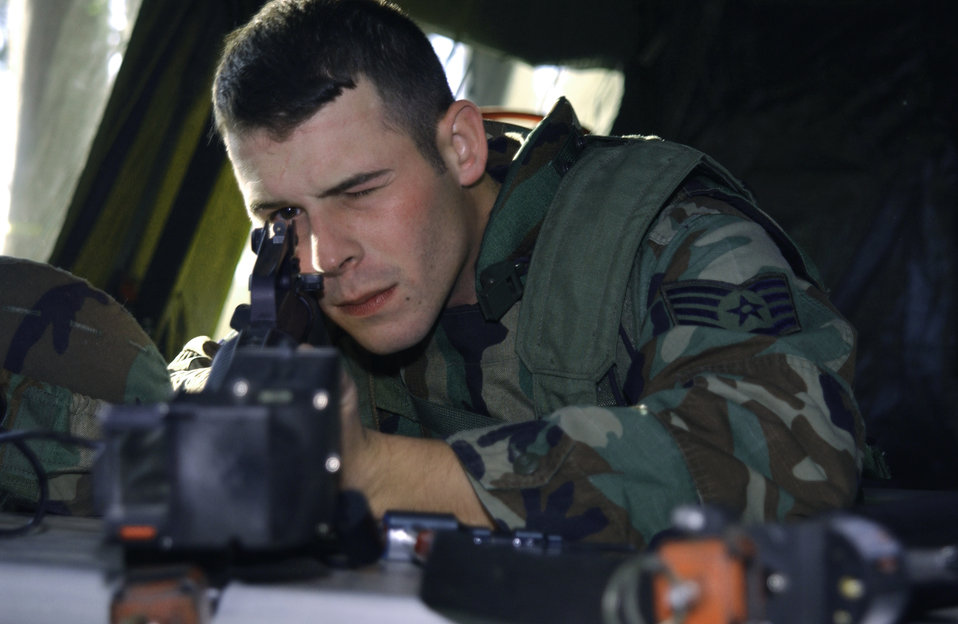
Line of sight

VANDENBERG AIR FORCE BASE, Calif. -- Staff Sgt Matthew Tussey checks the sight on his M-16 to verify the calibration of the M.I.L.E.S (multi-integrated laser engagement system) gear before heading out on security forces tactics competition for Guardian Challenge here May 4. Guardian Challenge, the world's premier space and missile competition, is a four-day event held annually. It tests the wartime readiness of Air Force Space Command's Airmen in spacelift, ICBM operations, communications, maintenance, helicopter operations, security forces and chef food preparation. Sergeant Tussey is assigned to the 21st Space Wing at Peterson Air Force Base, Colo.